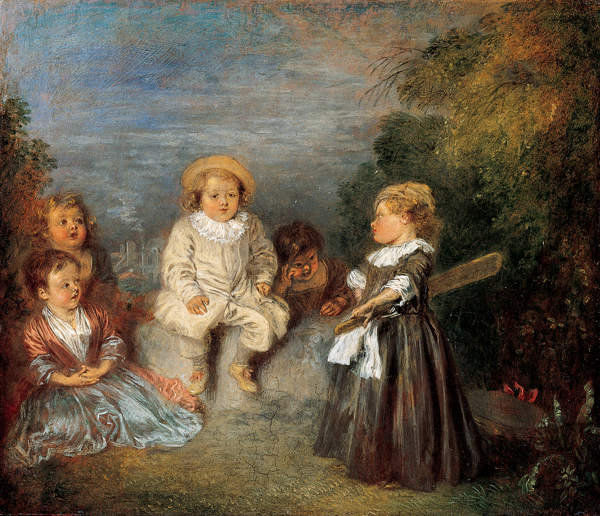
'Heureux age! Age d'or (Happy Age! Golden Age)', oil on panel painting by Jean-Antoine Watteau, 1716-20, Kimbell Art Museum